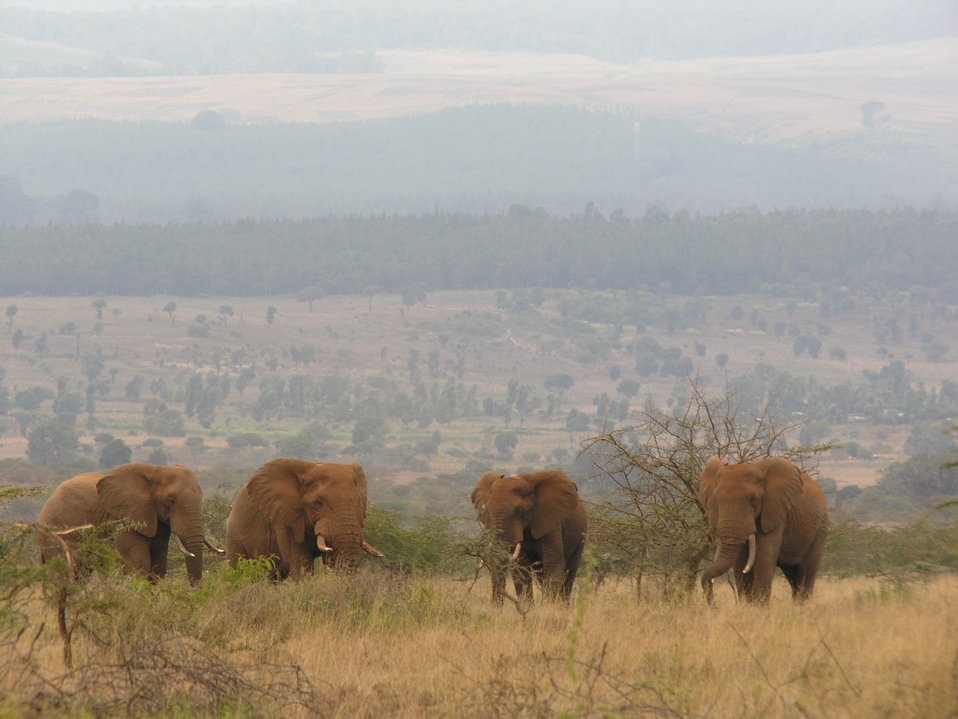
Elephant Study 3

National Parks in Africa are too small for elephants to stay inside year round. Many have to cross farming areas and come into conflict with people.